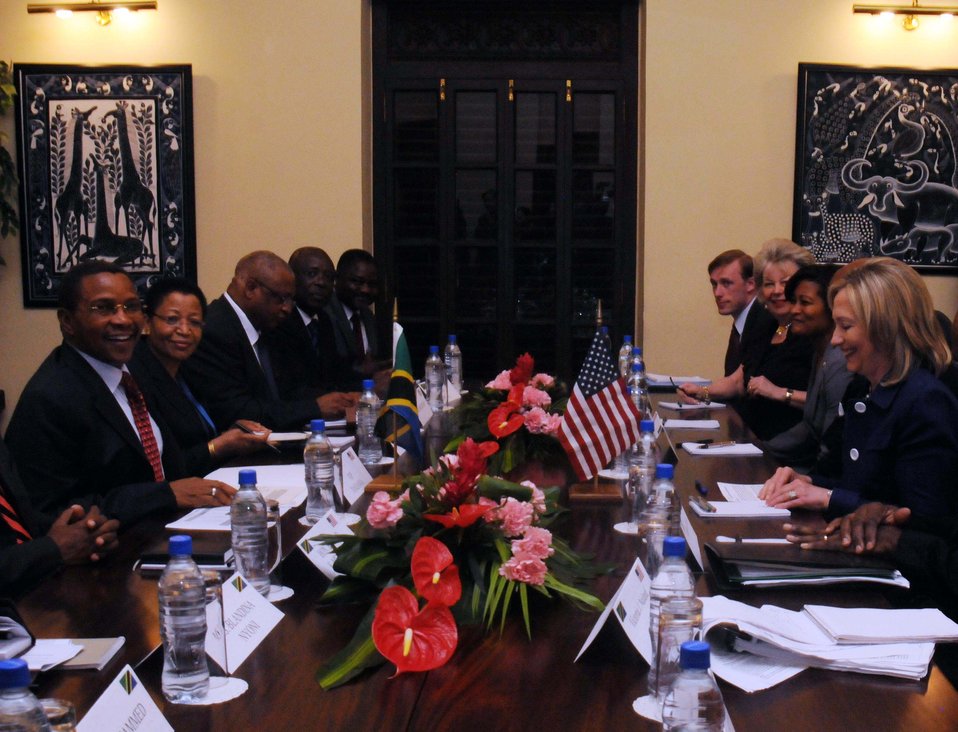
Secretary Clinton Meets With Tanzanian President Kikwete

U.S. Secretary of State Hillary Rodham Clinton, right, meets with Tanzanian President Jakaya Kikwete, left, at the State House in Dar es Salaam, Tanzania, on June 13, 2011.